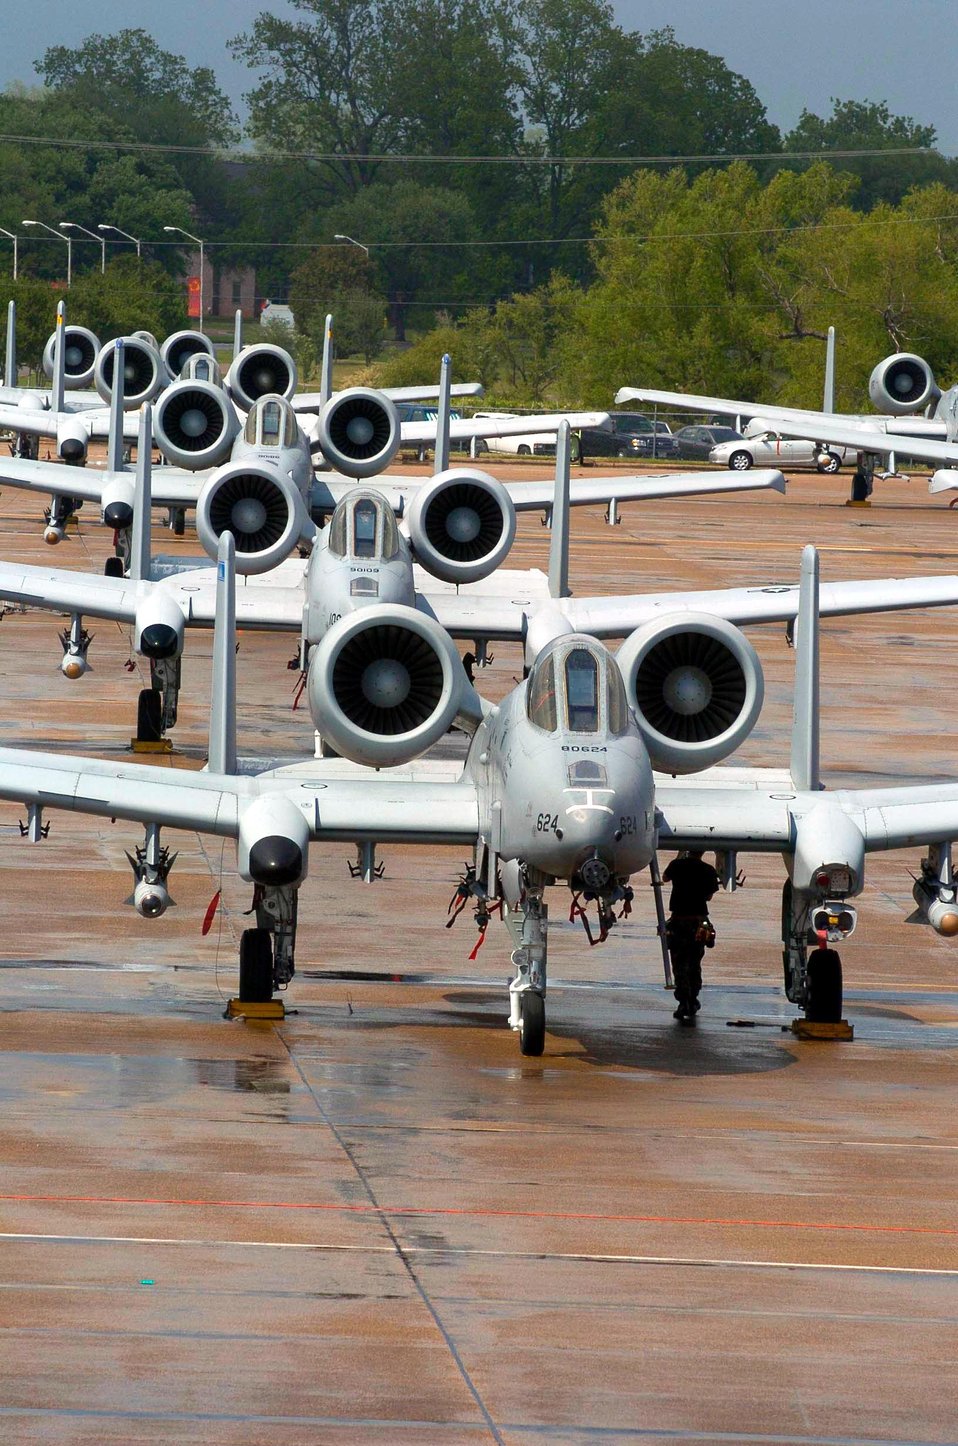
Hawgsmoke 2004

ALEXANDRIA, La. -- A-10 Thunderbolt IIs sit on the ramp here for Hawgsmoke 2004, a biannual A-10 bombing and tactical gunnery competition. Officials canceled the competition April 30 because of severe weather.